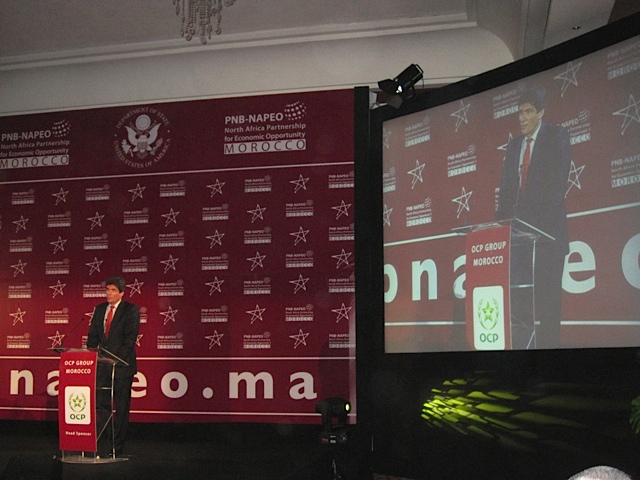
Assistant Secretary Fernandez Delivers Remarks

Assistant Secretary for Economic and Business Affairs Jose W. Fernandez delivers remarks at the second U.S. – Maghreb Entrepreneurship Conference in Morocco, January 16-18, 2012. In his remarks, Assistant Secretary Fernandez outlined the progress made through PNB-NAPEO since the inaugural U.S.-Maghreb Entrepreneurship Conference in December 2010.